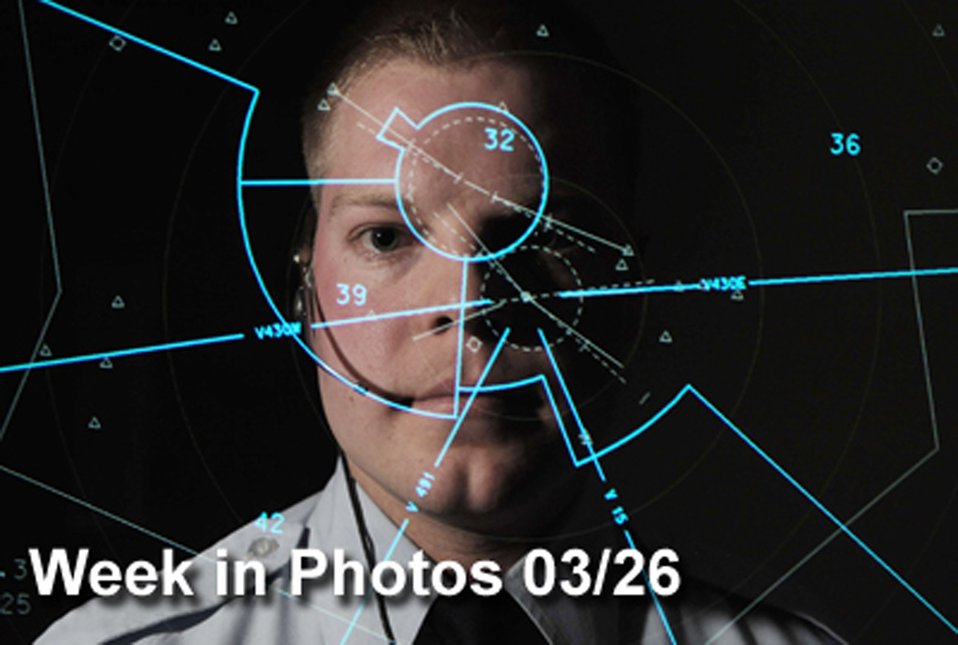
Week in Photos

Air Force Week in Photos for March 26, 2010, highlights photos from around the Air Force. In this photo by Airman 1st Class Corey Hook, Senior Airman Phillip Taylor views a radar scope, March 22, 2010, at Ellsworth Air Force Base, S.D. )